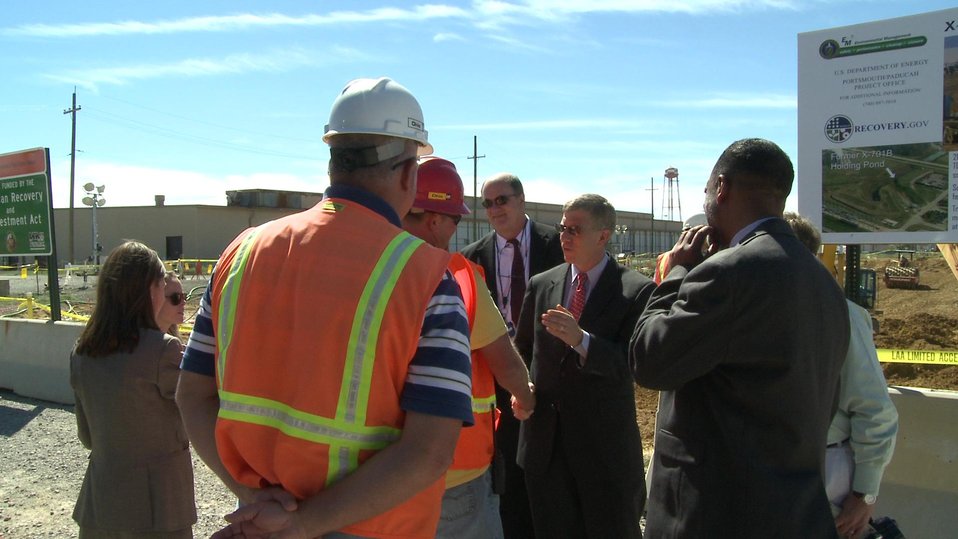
Deputy Secretary Daniel Poneman visits with workers at the X-701B Groundwater Plume Source Removal Project during a visit to the Portsmouth Site in southern Ohio on September 9. ARRA funds focus oxidant treatment on a 70,000 square foot source area of TCE contamination. Treatment is achieving a 95% reduction in the TCE levels, reducing the concentrations from 181,500 ug/kg to approximately 7,000 ug/kg. TCE was an industrial degreaser formerly used at the plant that enriched uranium from 1954 until 2001.